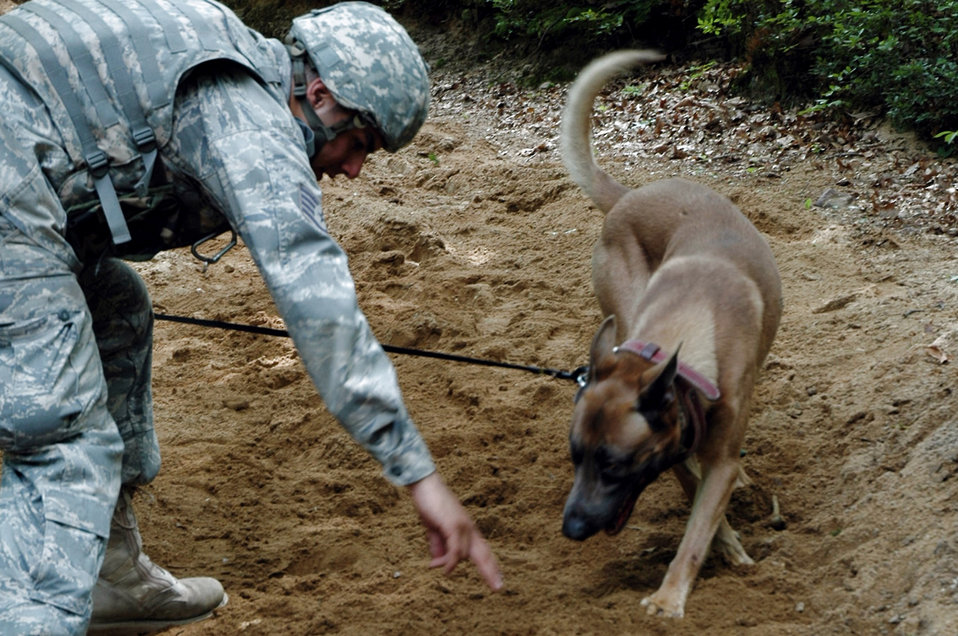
Teaching K-9 detection tactics

Staff Sgt. Matthew Hernandez and his military working dog, Grant, practice detection techniques during training in the Air Force Phoenix Warrior Training Course July 10 at Fort Dix, N.J. Phoenix Warrior is taught by members of the Air Force Expeditionary Center's Expeditionary Operations School and the 421st Combat Training Squadron. Sergeant Hernandez is from Royal Air Force Lakenheath, England.